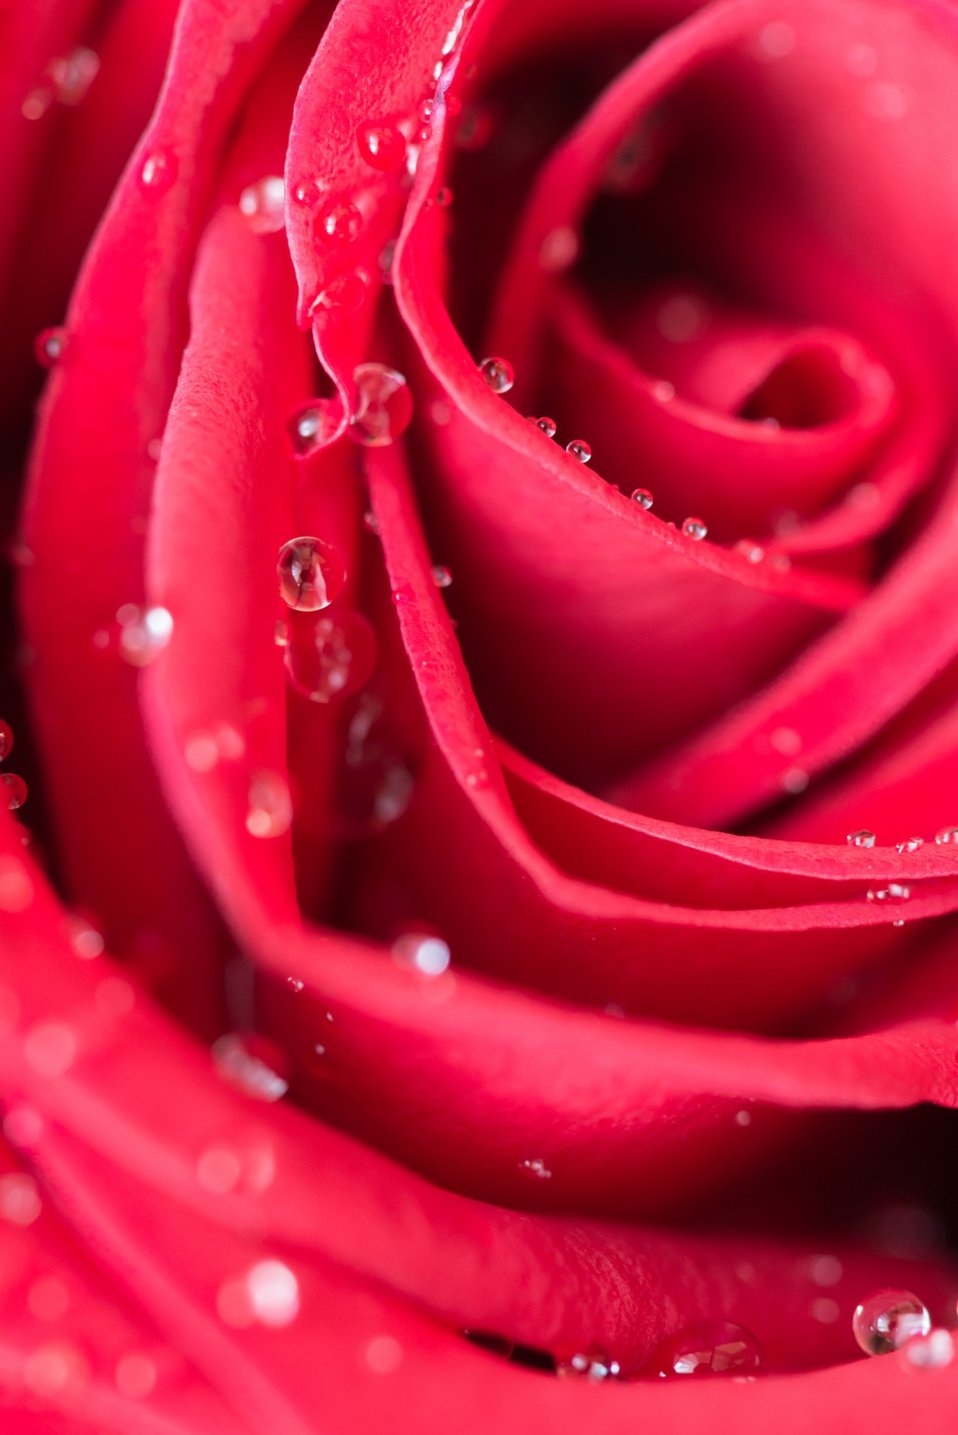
Detail of the rose

Red rose.